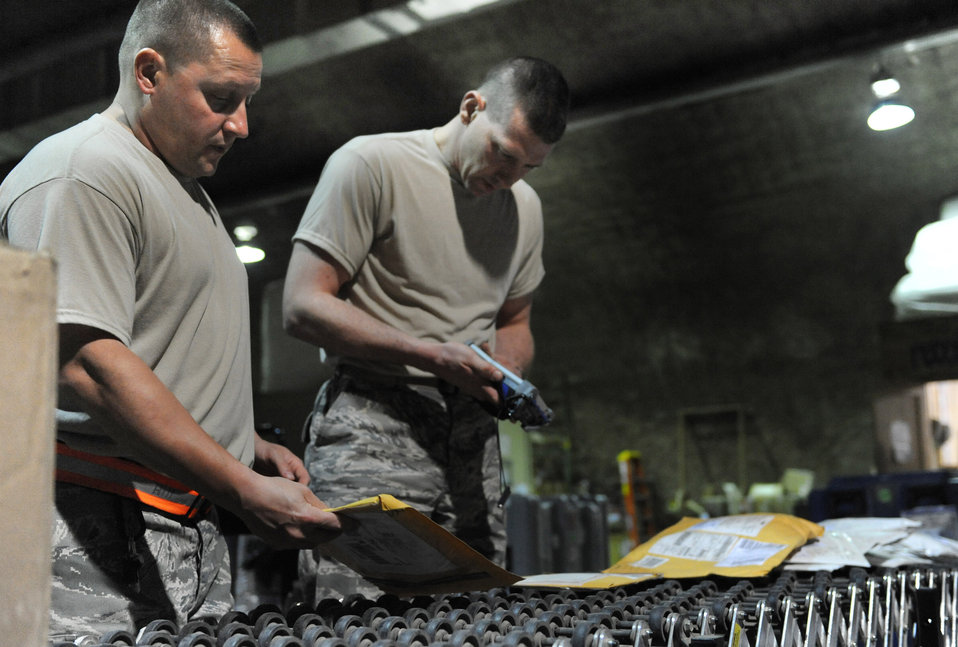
Making a list and checking it twice

Tech. Sgt. Joe Hill assists Staff Sgt. Mark Garcia during the in-checking process from a recent shipment Feb. 17 at Joint Base Balad, Iraq. Sergeant Hill uses an electronic device linked to an inventory system to in-check cargo. Sergeant Hill is the 332nd Expeditionary Logistics Readiness Squadron NCO-in charge of in-bound operations deployed from Scott Ill. He is a native of O'fallon, Ill. Sergeant Garcia is assigned to the 332nd Expeditionary Logistics Readiness Squadron in-bound freight section and deployed from Salt Lake City Guard Base. He is a native of Ogden, Utah.